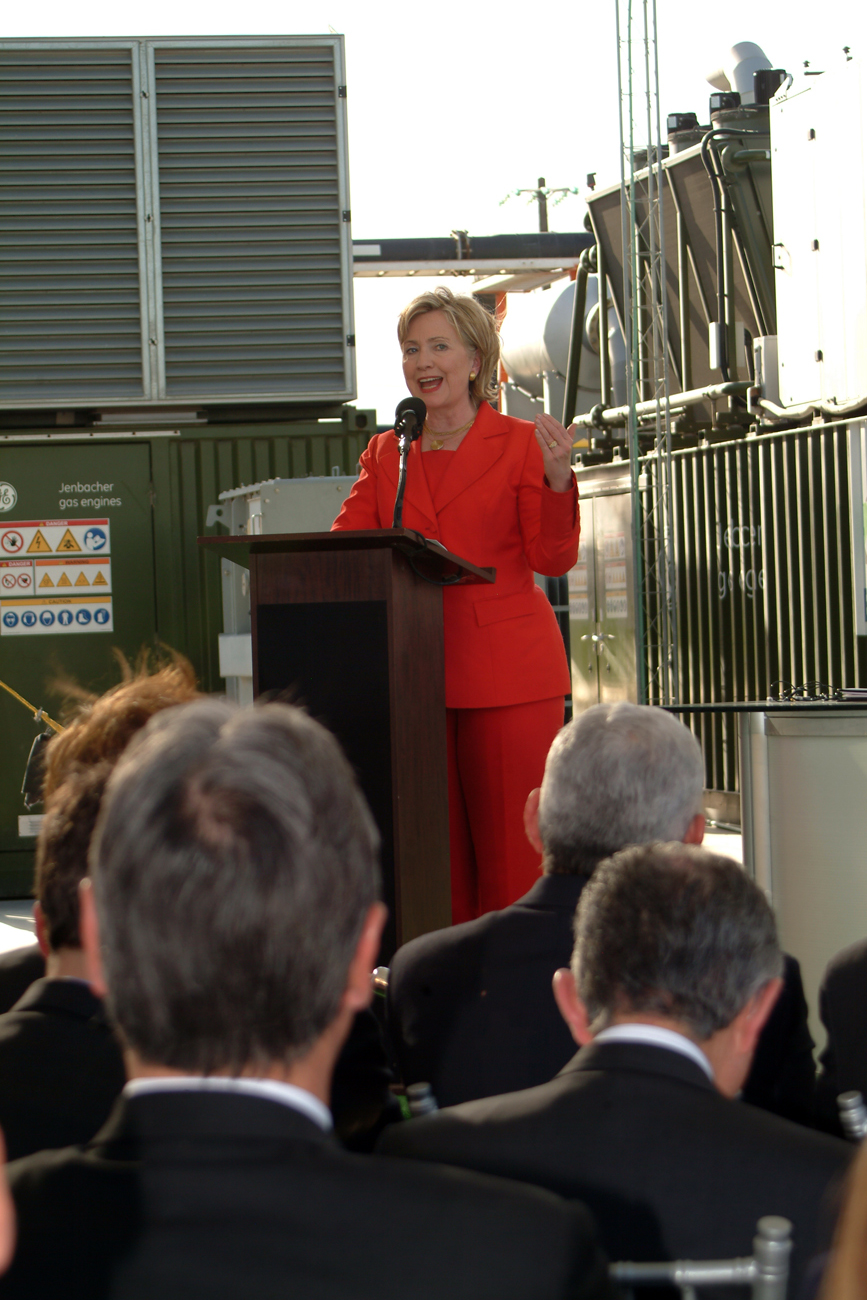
Secretary Clinton at Simeprode Power Plant

U.S. Secretary of State Hillary Rodham Clinton during a visit to the Simeprode power plant in Monterrey, Mexico March 26, 2009.